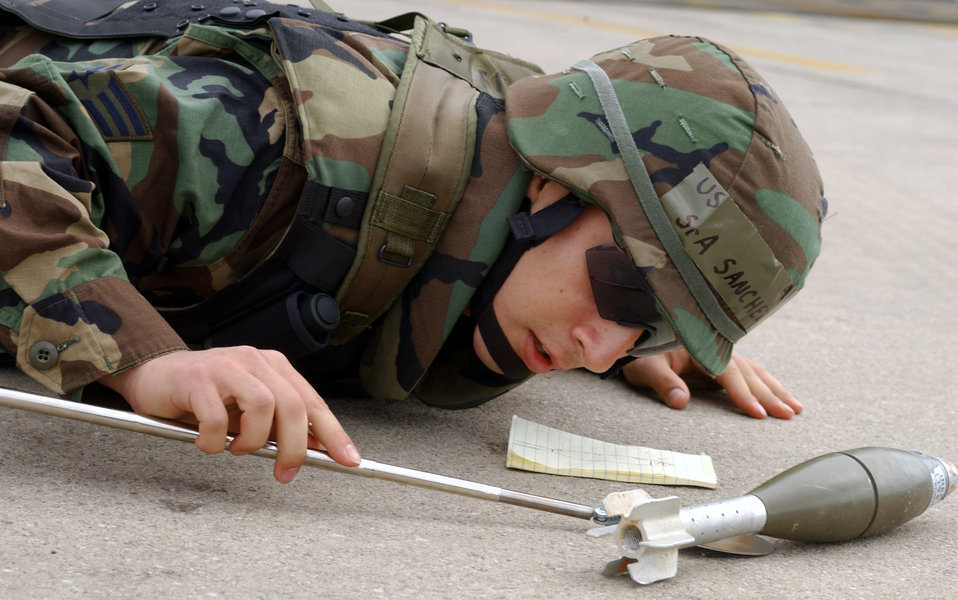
Analyze this

SPANGDAHLEM AIR BASE, Germany -- Senior Airman Carlos Sanchez analyzes a simulated mortar during exercise Harley Saber 04-04 here June 21. Airman Sanchez is a explosive ordnance disposal specialist with the 52nd Civil Engineer Squadron.